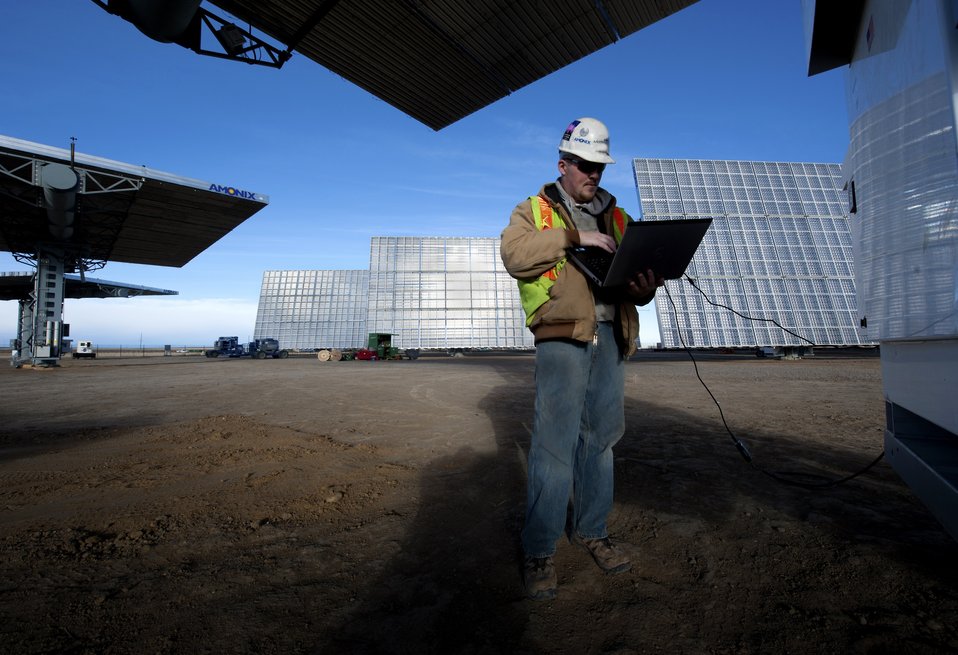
Testing Photovoltaics

Adam Modert, with Mortenson Construction uses specialized software to focus Amonix 7700 concentrated photovoltaic panels. The Amonix 7700 is the first terrestrial photovoltaic system capable of converting one-fourth of the sun's energy into usable electricity.